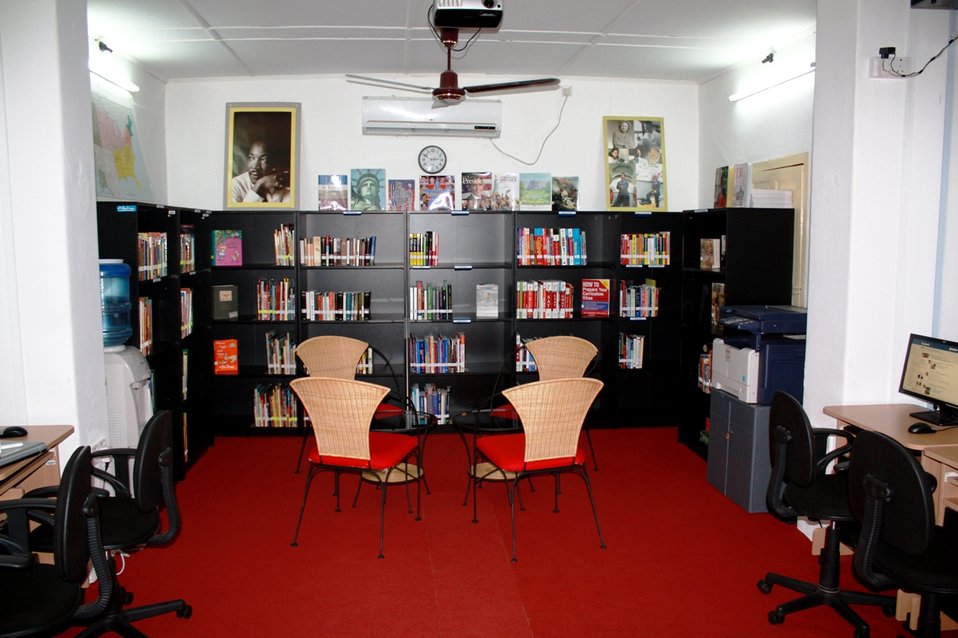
Chairs are set up for the opening of the American Corner Jaffna in Colombo, Sri Lanka, on January 24, 2011.